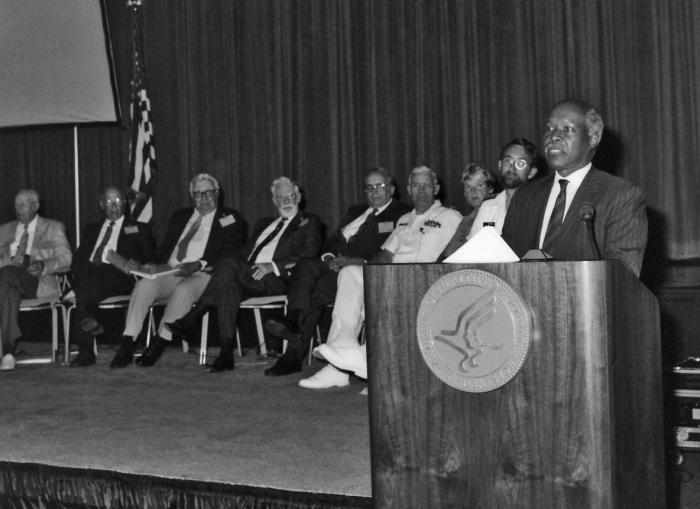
This 1992 photograph, taken during the Centers for Disease Control's 46th anniversary ceremony, showed former organization Directors listening to an address being made by the Health and Human Services Secretary at that time, Dr. Louis Sullivan, as he stood at the podium.